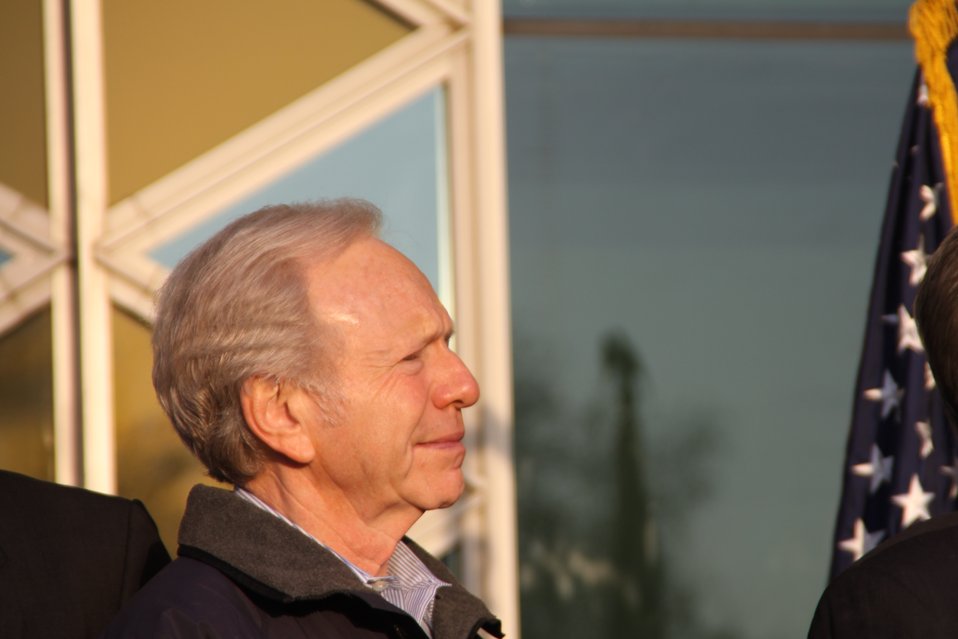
Senator Lieberman